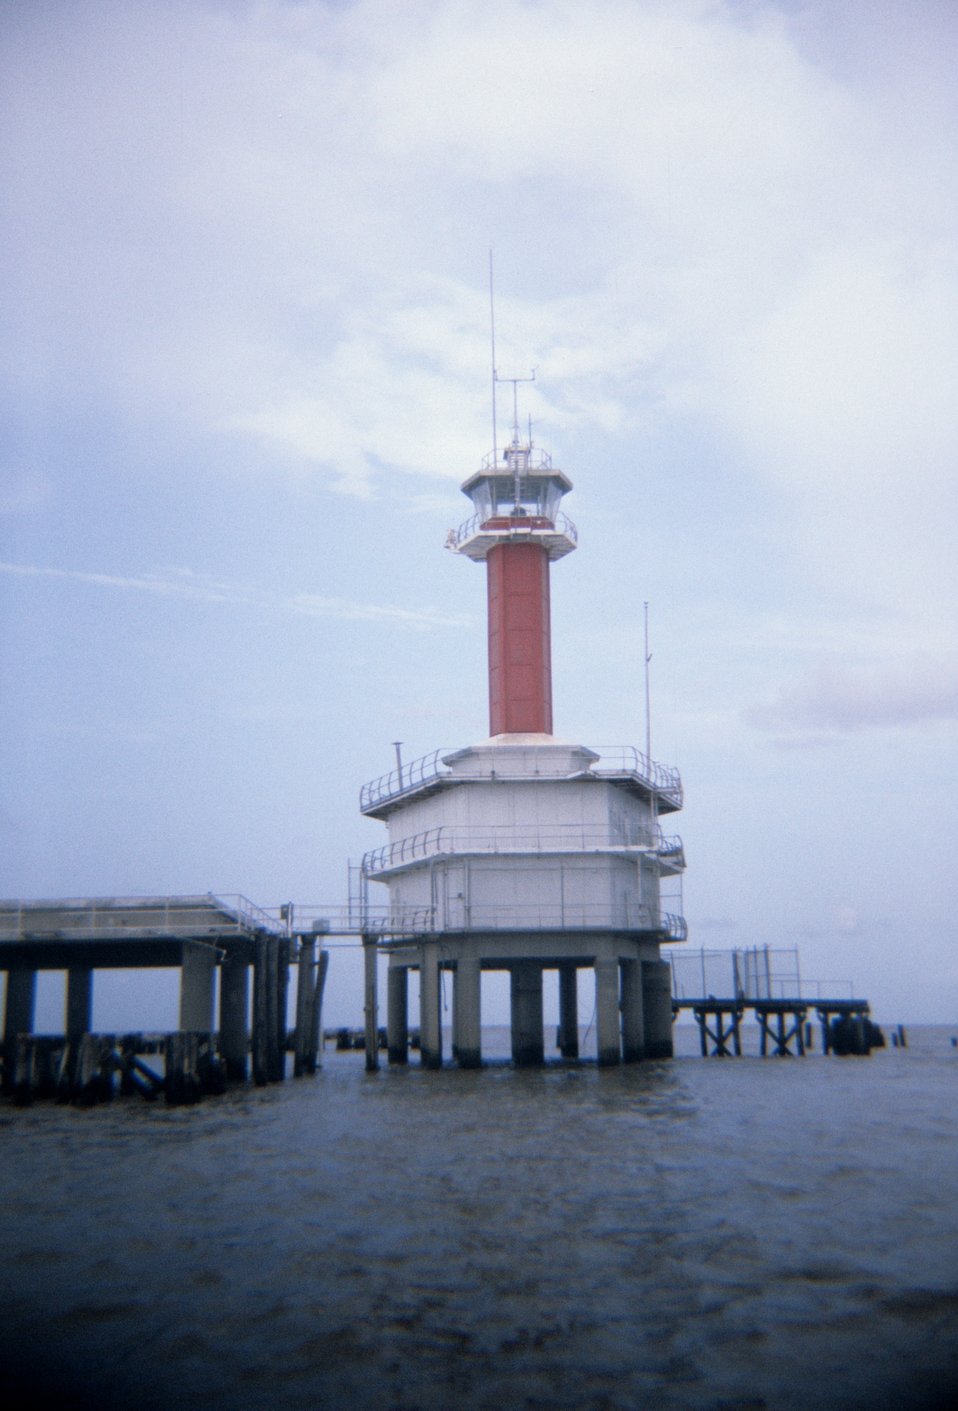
Southwest Pass Lighthouse